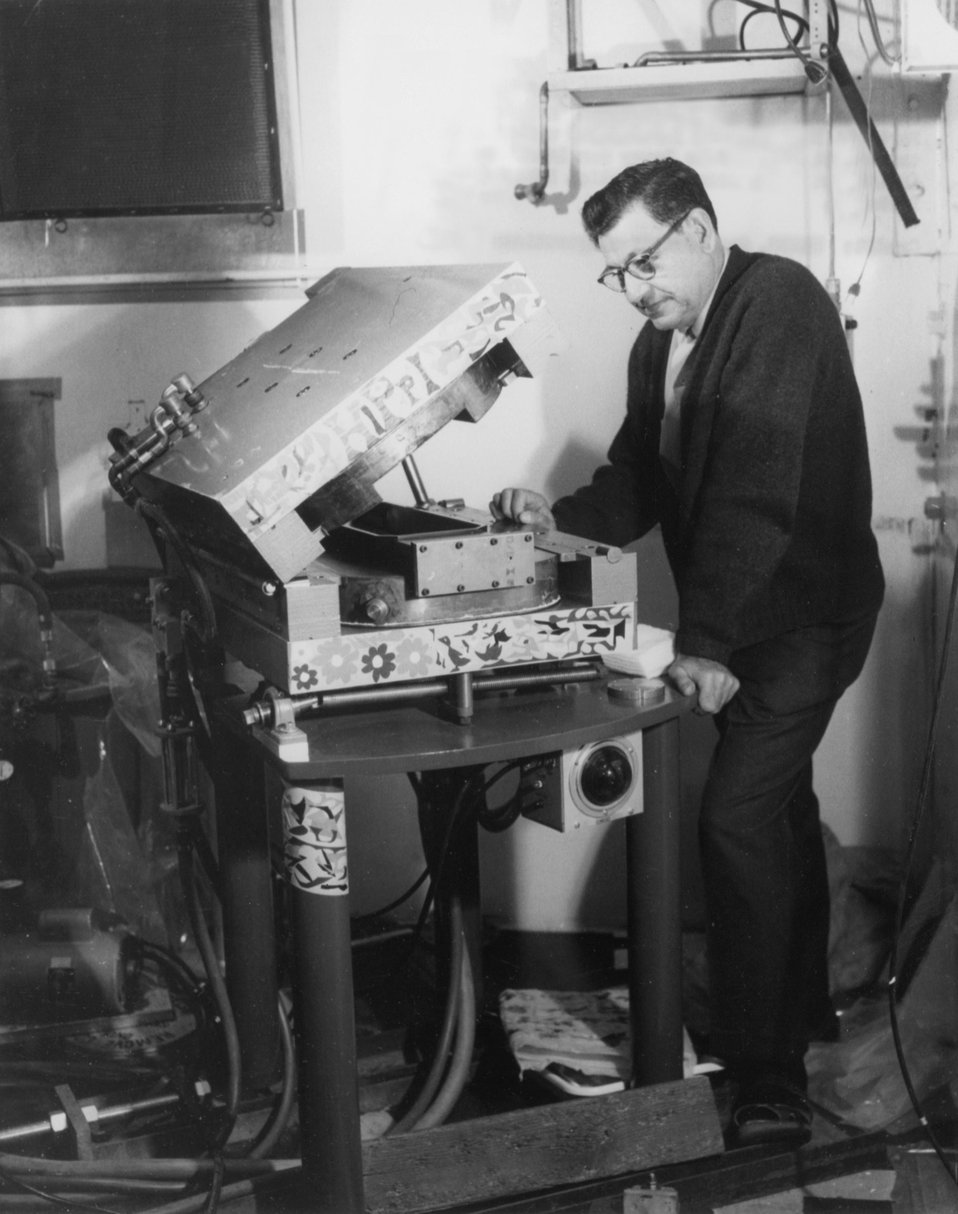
Dr. Albert Ghiorso, co discoverer of 9 trans uranium elements, with his new-developed 'HIPPI' (Heavy Ion Particle Partitioning Instrument) which is used in the target area of the Heavy Ion Linear Accelerator (HILAC). Circa 1969.